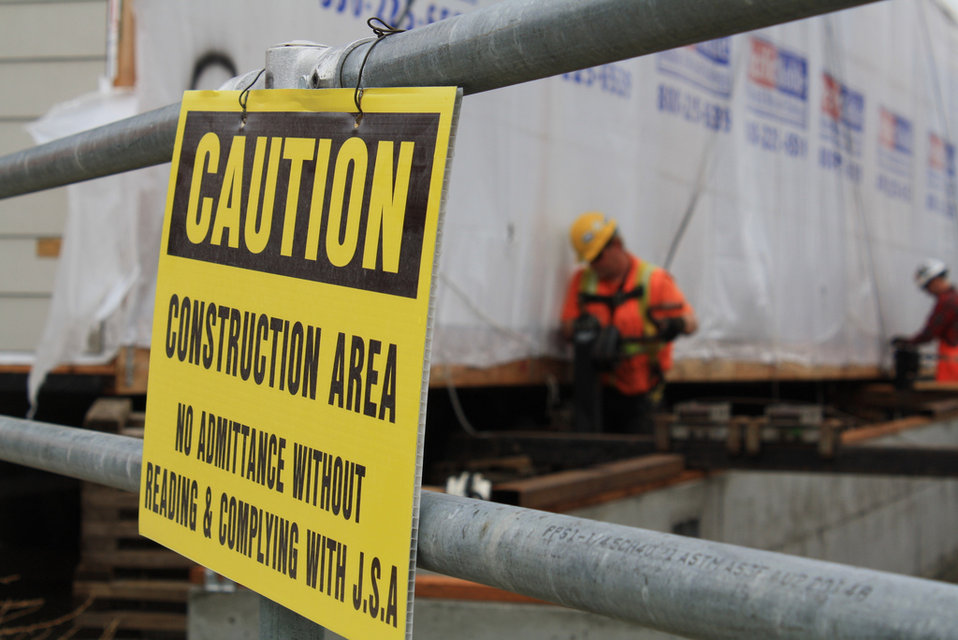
222-S green modular install at Hanford.

A modular office building designed to last 30 years is now installed on its permanent foundation. Its a hybrid between a mobile home and a traditional building. The 2,800 square foot building meets DOE environmental directives but is also more substantial than a trailer and more comfortable for employees. The building has awnings to reduce glare, several large windows to utilize natural light and the insulation and siding are made from recycled materials. All of the appliances are energy-efficient. Even the installation process is environmentally-conscious using minimal gas and no heavy equipment.